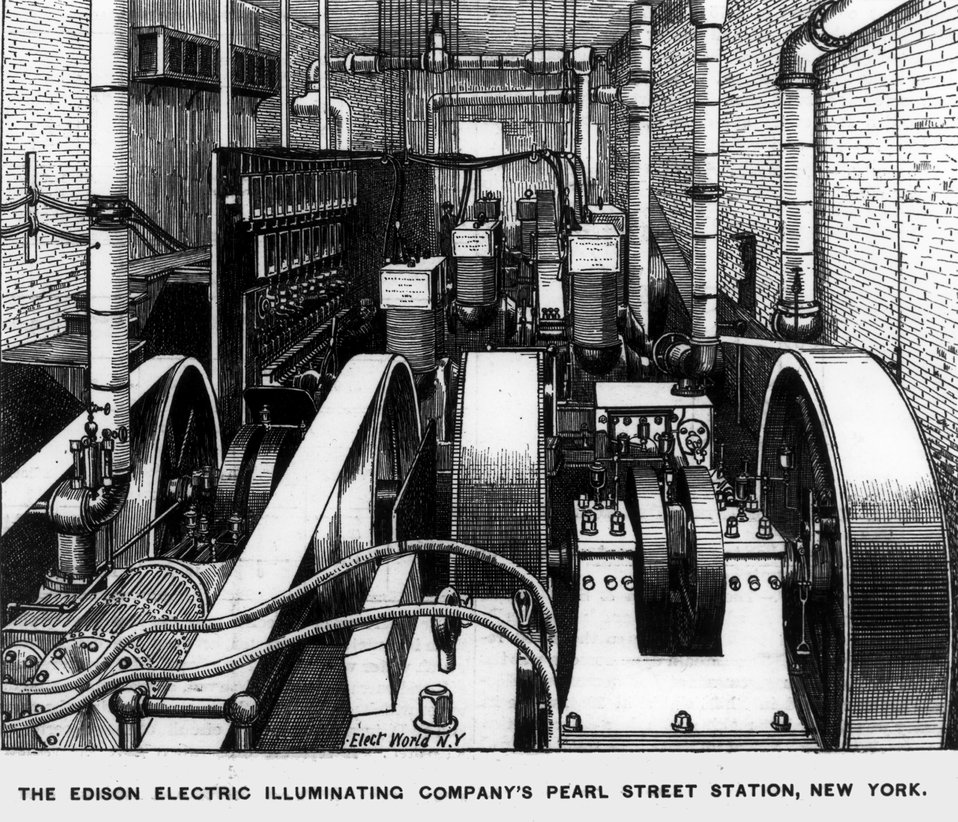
Sketch of interior of Pearl Street Station, NY